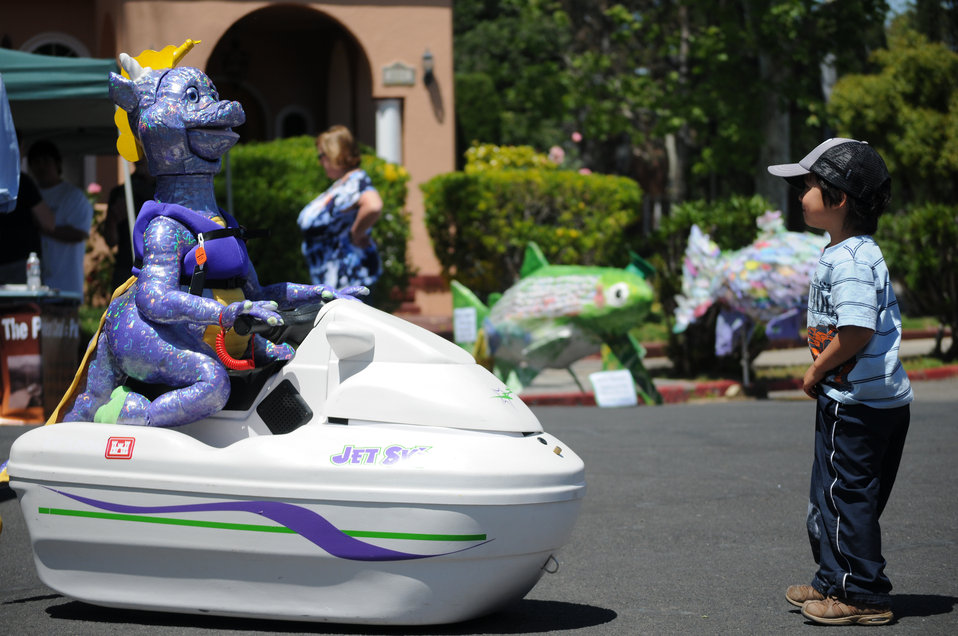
Stockton Steelhead Festival

STOCKTON, Calif. (May 1, 2011) – Corps water safety mascot Seamoor the sea serpent explains the importance of life jackets at the first-ever Stockton Steelhead Festival here May 1. New Hogan Dam, managed by the U.S. Army Corps of Engineers Sacramento District, helps reduce Stockton’s flood risk and impounds the Calaveras River, Stockton’s main water supply. New Hogan Lake park rangers brought Seamoor to the event to talk about water safety and the importance of maintaining a healthy watershed to helping the steelhead population recover. “With the summer recreation season coming up, it’s a good time to be reminding everyone about ways to stay safe when they’re on the lake,” New Hogan park ranger Gary Basile said. Steelhead trout are listed by the U.S. Fish and Wildlife Service as a threatened species in the rivers of California’s Central Valley.